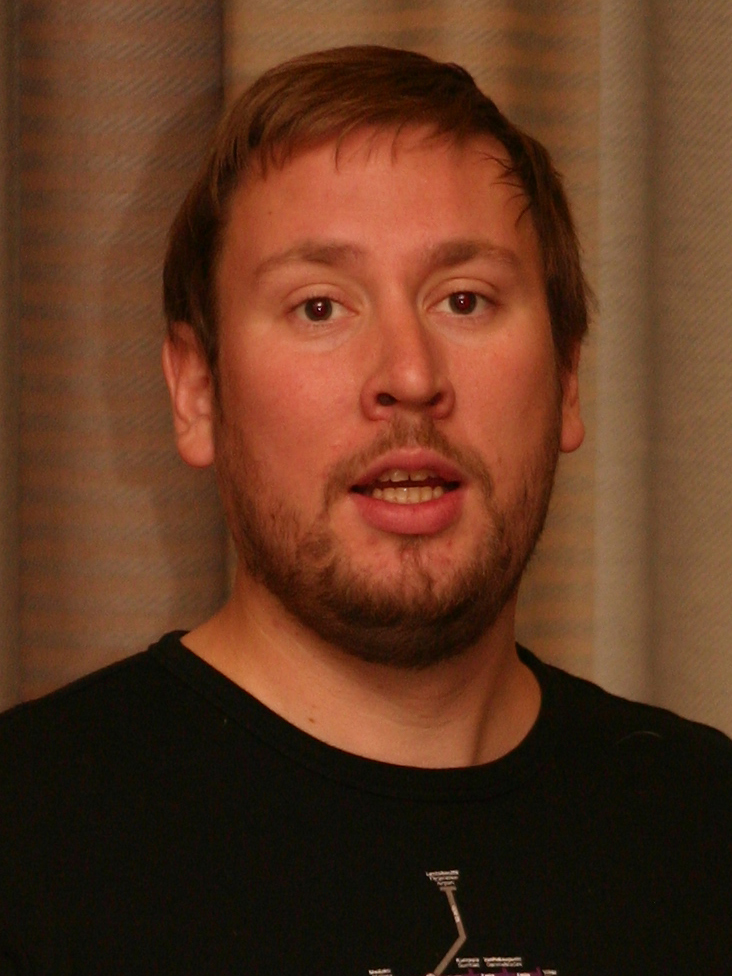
Suomi: Paavo Arhinmäki Kiljavalla 2007 Finnish politician Paavo Arhinmäki